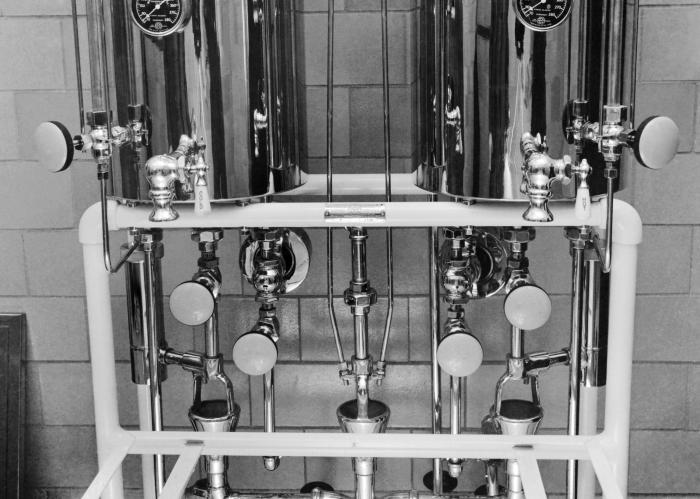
This historic 1942 photograph featured a close-up view of the structural details associated with the tubing connections of a Wilmot-Castle water sterilization facility.